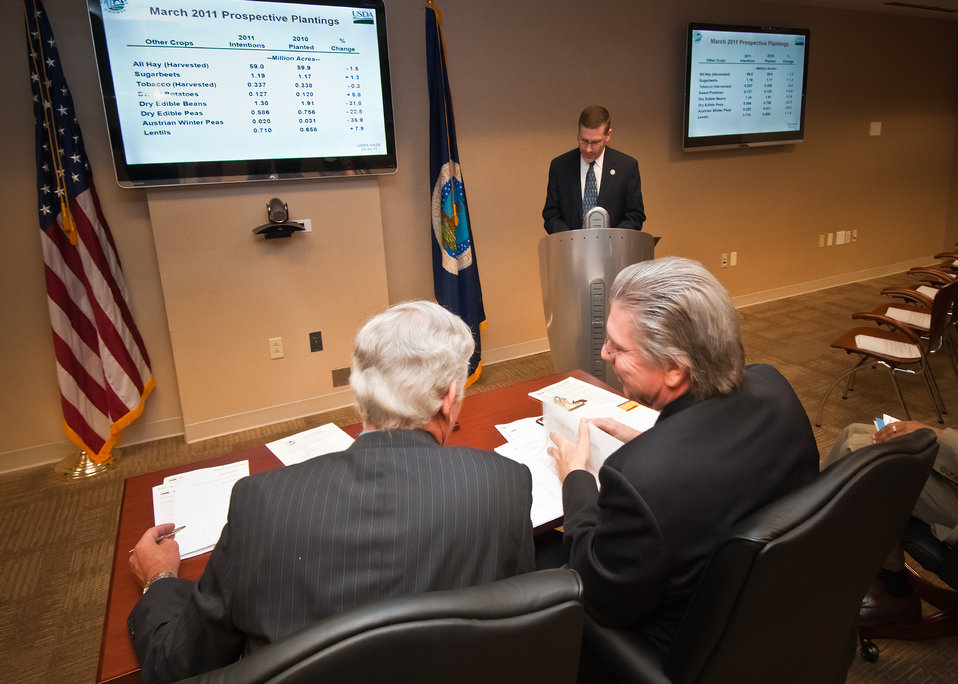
Michael Scuse (left), Undersecretary, Farm and Foreign Agricultural Services and Dr. Joseph Glauber (right), Chief Economist at the U.S. Department of Agriculture listen to Lance Honig, Chief, Crops Branch, National Agricultural Statistics Service explain the United States Department of Agriculture’s, National Agricultural Statistics Service, March Agricultural Survey. Undersecretary Scuse signed as the Secretary of Agriculture’s designee releasing the information at the USDA, NASS Lockup in Washington, DC, Thursday, March 31, 2011. The NASS lockup is agricultural commodity information held until the Secretary of Agricultural or Secretary’s Designee has signed and released the information. The signing is the official act of recognizing the information as an official USDA document.